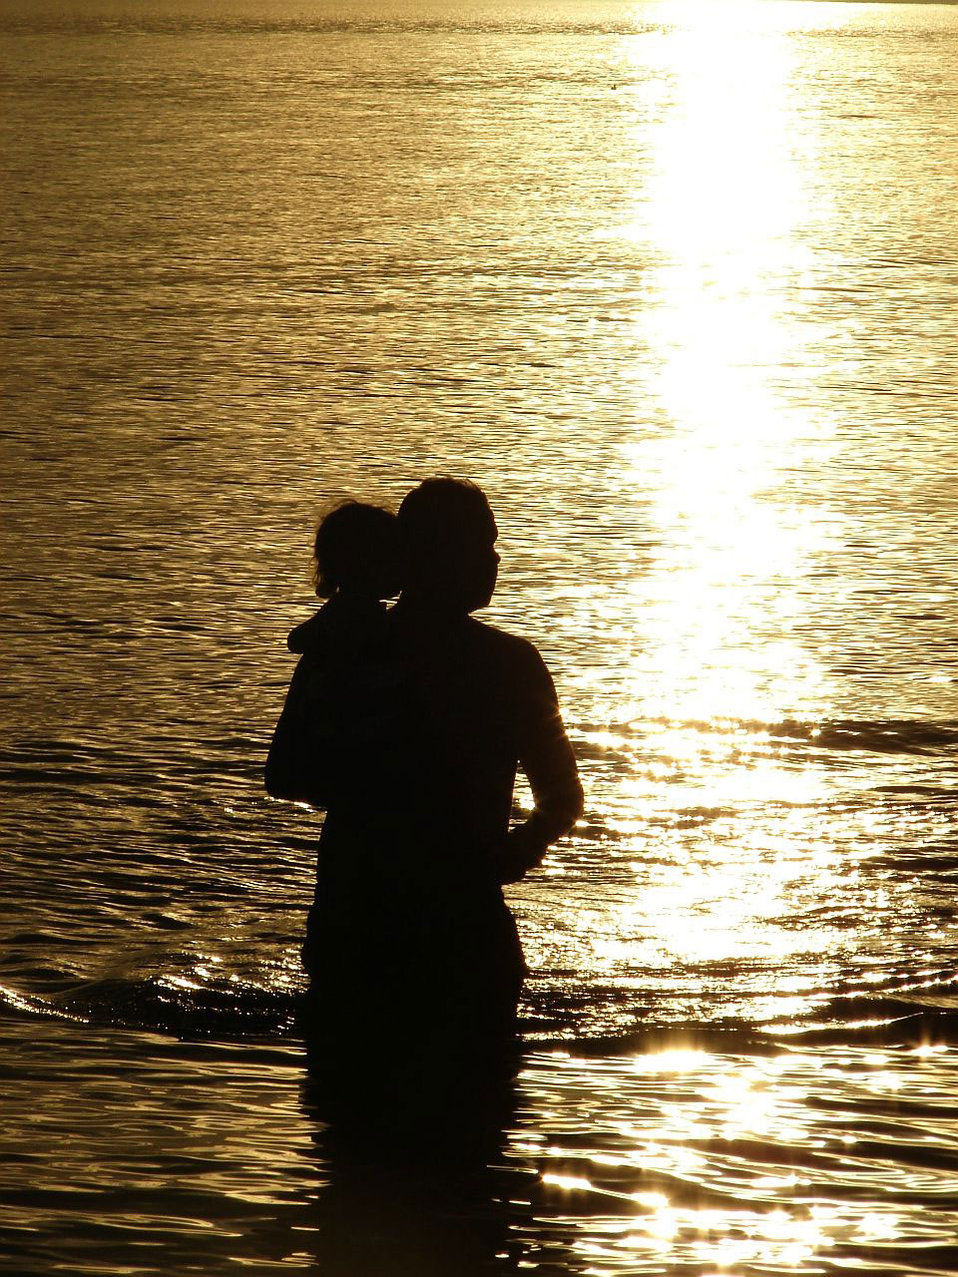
Father with daughter

Watching path of light before sunset.